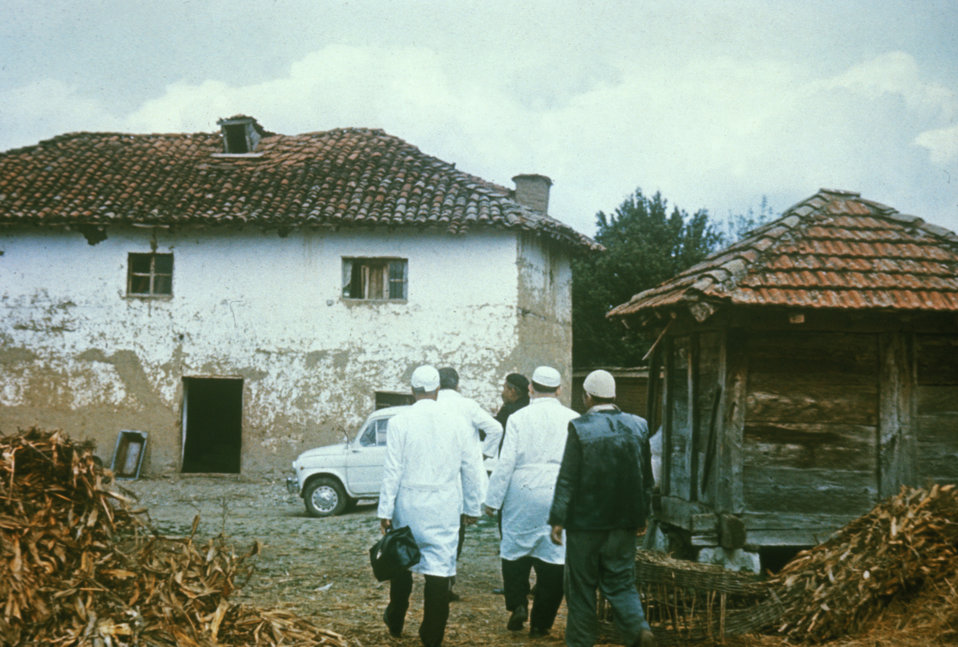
This was a make-shift Hospital for smallpox patients during an epidemic in Kosovo, Yugoslavia in 1972.